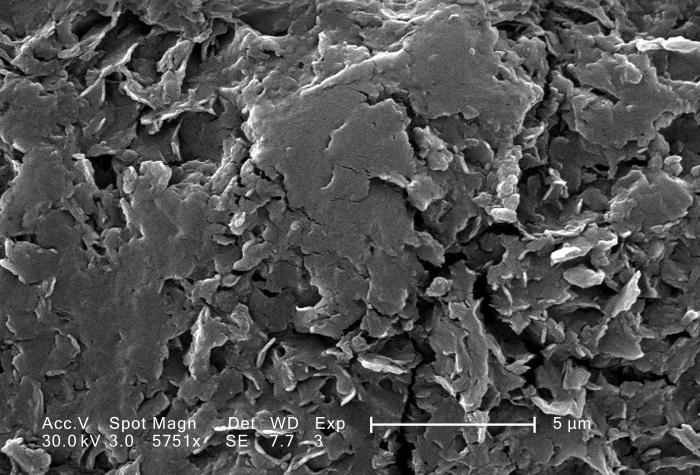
This scanning electron micrograph (SEM) revealed the highly magnified, roughened surface of a Vitis sp., red table grape; Magnified 5751x. Note that what would appear to be a smooth surface by the unaided eye, is actually a roughened surface, capable of harboring bacteria in its cracks and crannies, and therefore, should be thoroughly washed before consuming these scrumptious fruits. Comparing this grape's surface to that of the white table grape, i.e., PHIL ID#s 7556, 7557, 7558, 7559, you'll not that the red table grape's surface is far rougher than the white table grape's.Fresh Facts: